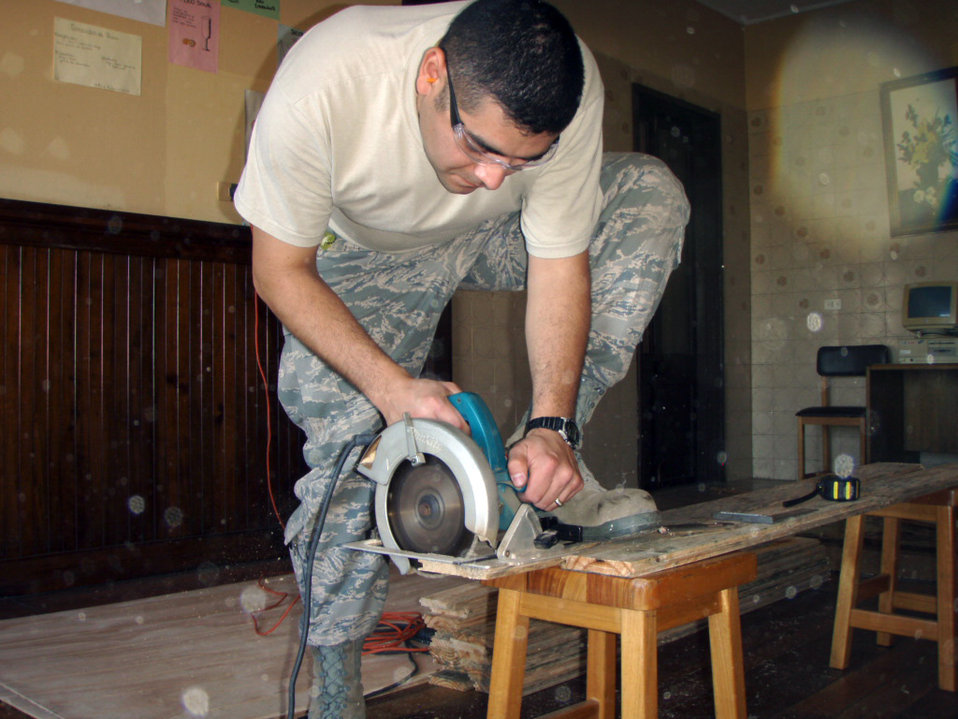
Red Horse Airmen renovate Chilean school's library

Staff Sgt. Lorenzo Lara, one of two Rapid Engineer Deployable Heavy Operational Repair Squadron Engineer, or RED HORSE Airmen cuts wooden slats that were used to complete renovations of a dilapidated library at a Chilean culinary and hotel service high school in Quilpae, Chile Oct. 31 giving 80 students a comfortable and usable library the students and faculty can use for years to come. The renovation, the result of Operation Southern Partner -- a two-week Twelfth Air Force (Air Forces Southern) led event aimed at providing intensive, periodic subject matter exchanges with partner nations in the U.S. Southern Command area of focus -- took the two RED HORSE Airmen, and their Chilean civilian counterparts four days to complete; three days ahead of schedule.